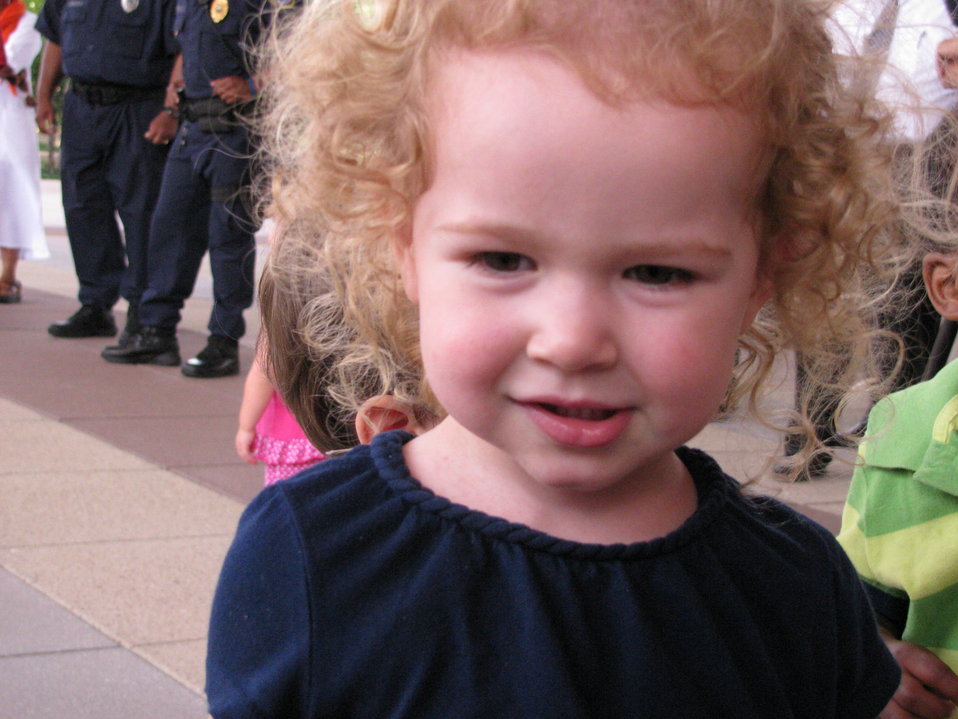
Feds Feed Families 2

Children at the Feds Feed Families event at DoE